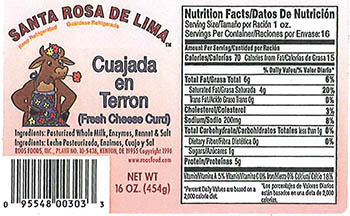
RECALLED – Variety of cheeses

February 23, 2014 – Product Recall – Roos Foods Voluntarily Recalls Variety of Cheeses (listed below) Due to Possible Health Risk.